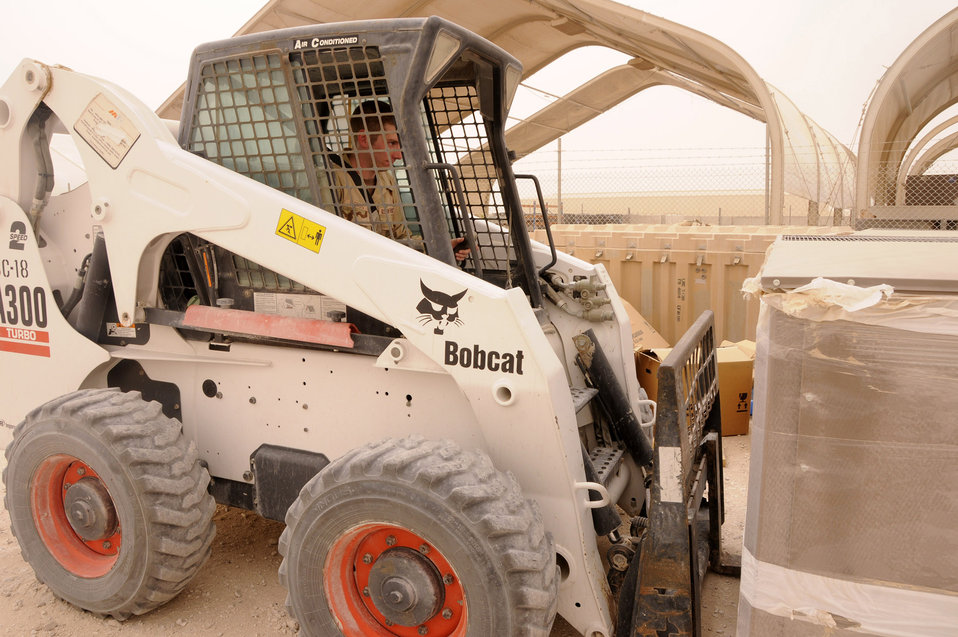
Cadets experience real-world deployment

Air Force Academy Cadet Brian Vickers lifts a pallet as part of his on-the-job training June 19 at a base in Southwest Asia. The cadets are visiting the base as part of the academy's Operation Air Force program, allowing them to experience an active-duty deployment. The visit includes experiencing many areas of the civil engineer squadron to learn more about the labor that keeps the squadron moving.